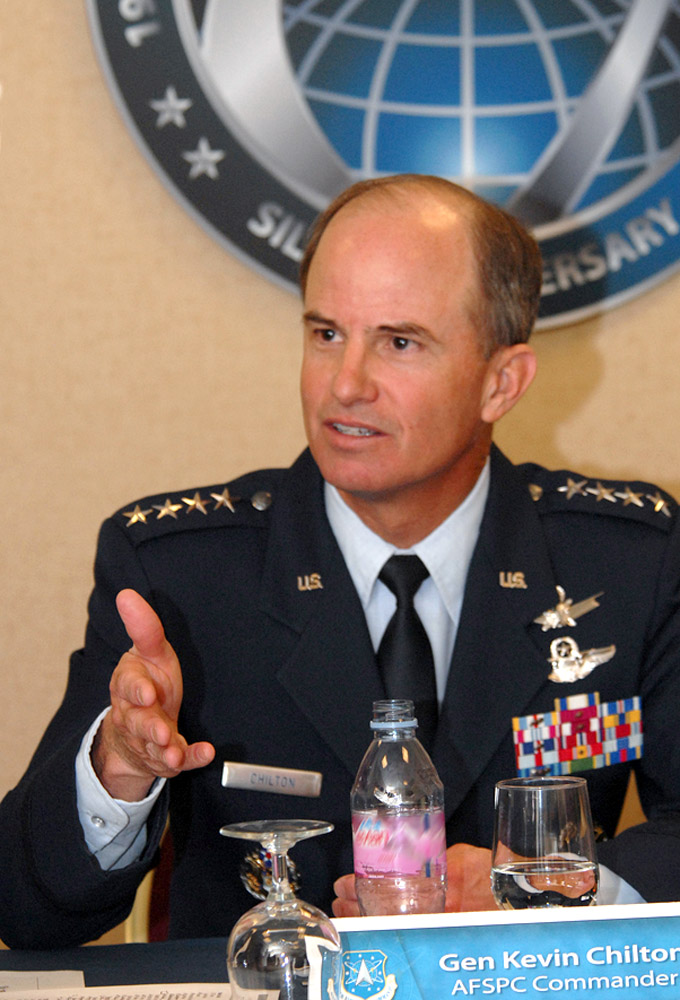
Chilton delivers priorities for future space capabilities

Gen. Kevin P. Chilton, Air Force Space Command commander, sits down with reporters April 12 after delivering remarks at the 23rd National Space Symposium in Colorado Springs, Colo. At the symposium, General Chilton spoke to an audience of more than 500 military and civilian representatives about delivering space capabilities to the joint fight.